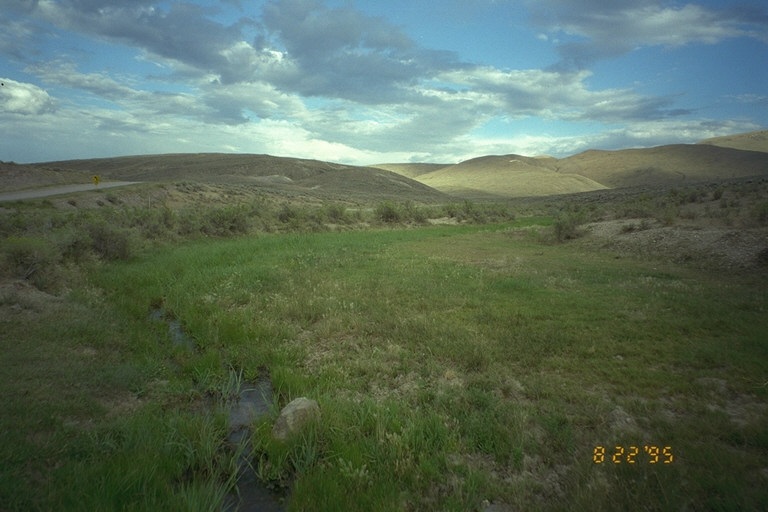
Riparian area Public Lands Salmon Field Office UCSC Upper Columbia Salmon Clearwater District